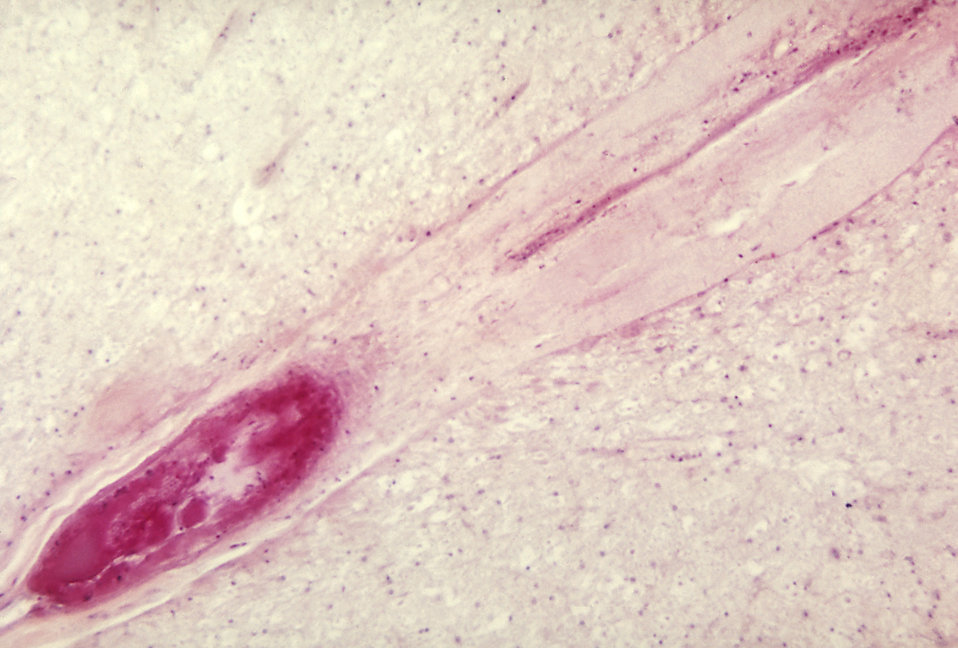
A photomicrograph of the lumbar spinal cord depicting an infarct due to Polio Type III surrounding the anterior spinal artery.